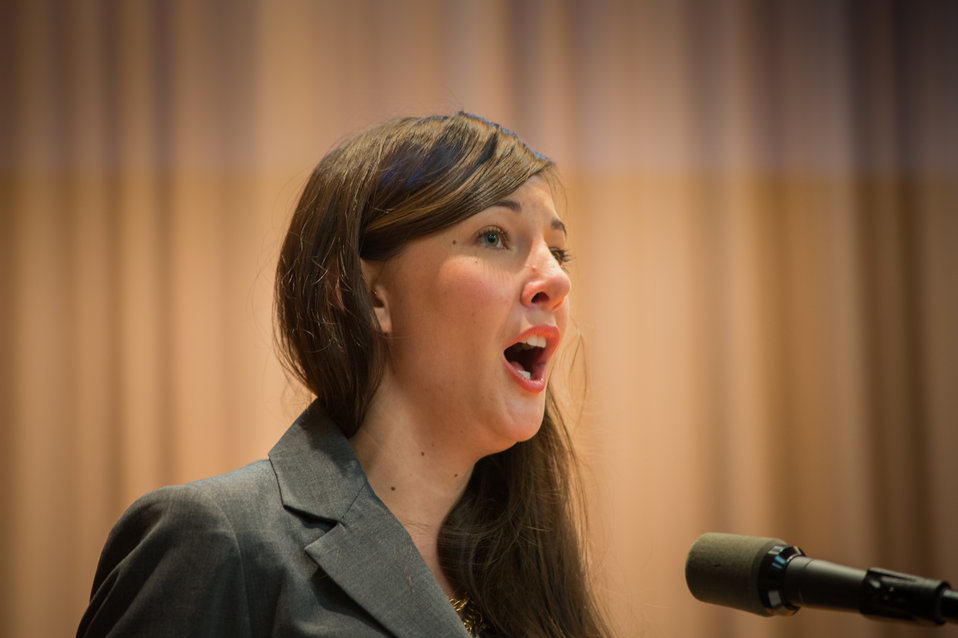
U.S. Department of Agriculture (USDA) Office of the Inspector General (OIG) Melissa Bentleyl sings the National Anthem at the Asian Pacific American Heritage Observance at the U.S. Department of Agriculture (USDA) in Washington, D.C. on Thursday, May 22, 2014.